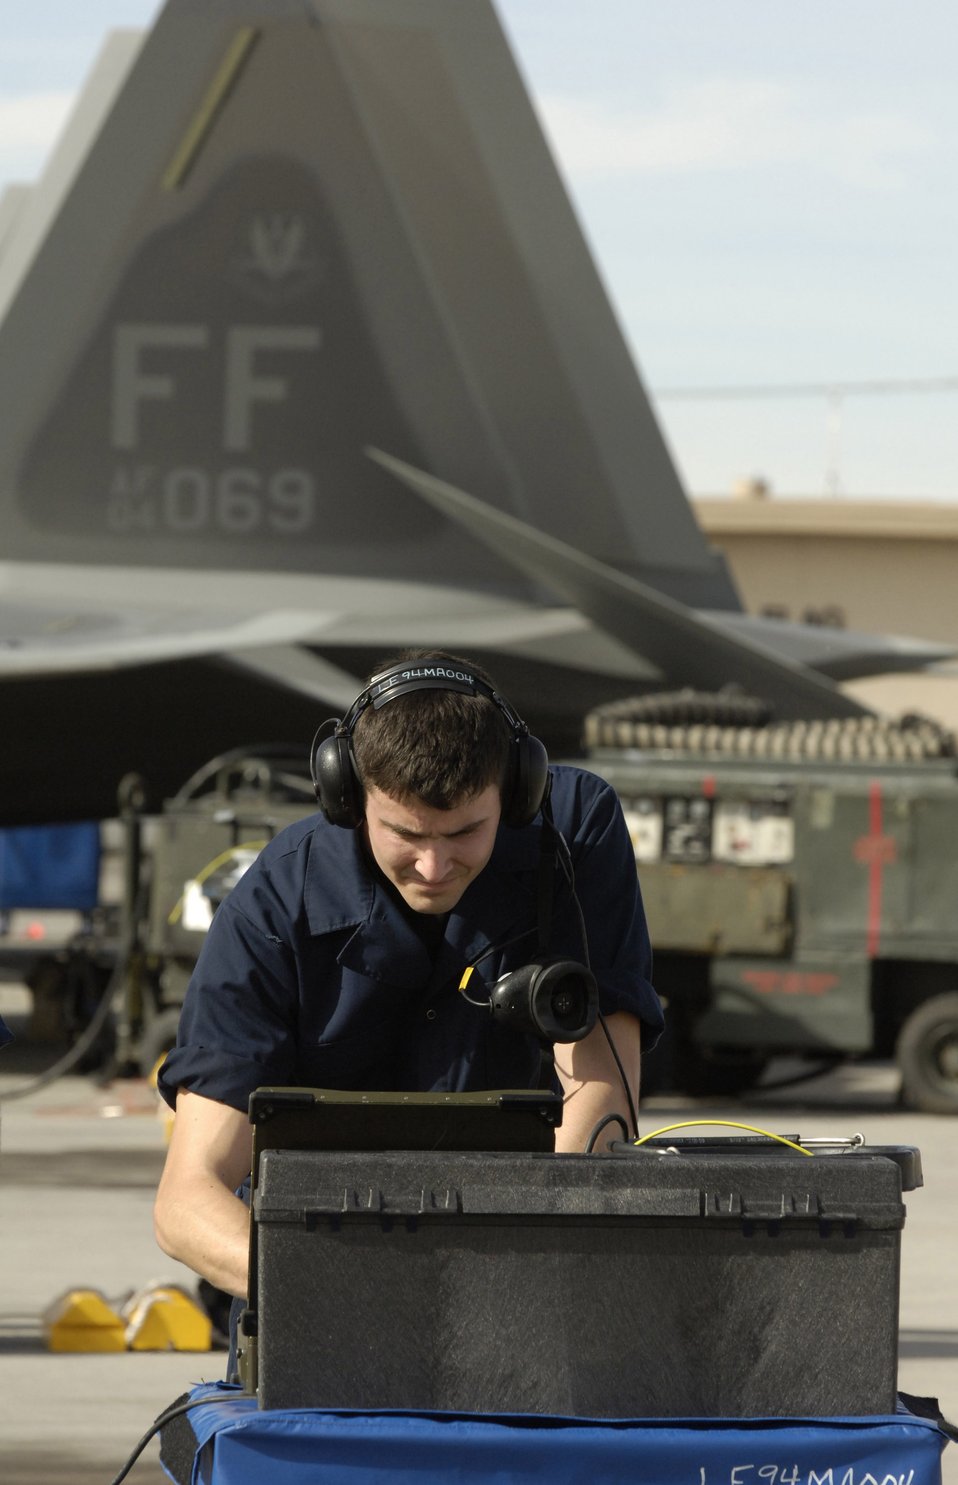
Raptors invade Nevada

Airman 1st Class Adam Watson reviews F-22 Raptor data on a portable maintenance aid during Red Flag 07-02 Feb. 6 at Nellis Air Force Base, Nev. Red Flag sharpens aircrews' warfighting skills in realistic combat situations. The F-22s will be flying missions during the day and night to the nearby Nevada Test and Training Range where they will simulate an air war. The Air Force and Navy, along with military forces from Australia and the United Kingdom, are participating in Red Flag. Airman Watson is a tactical aircraft maintenance specialist with the 94th Fighter Squadron at Langley Air Force Base, Va. This is the first deployment to Red Flag for the 94th FS with the F-22.